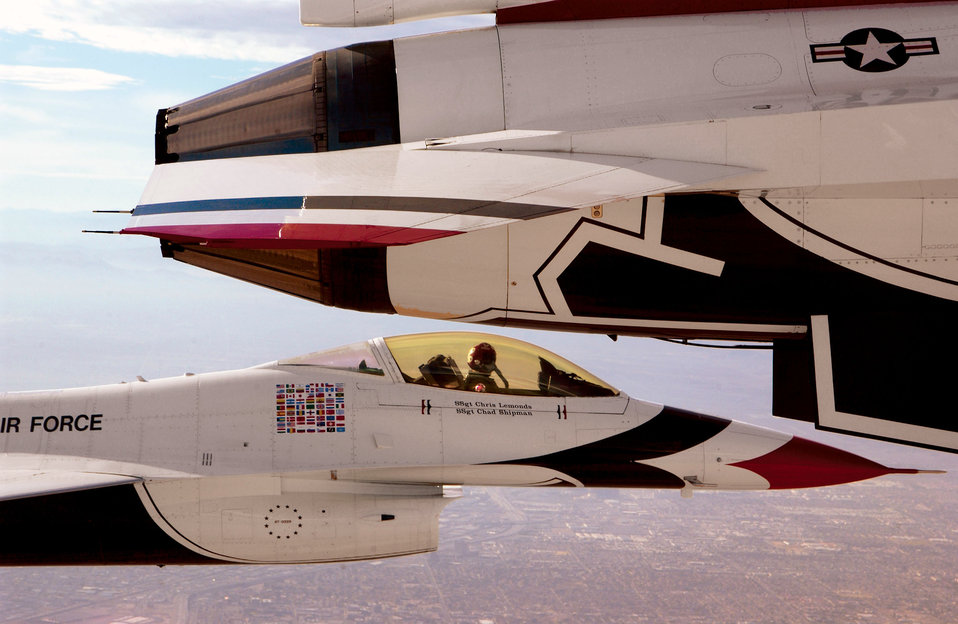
Wingman

NELLIS AIR FORCE BASE, Nev. -- Capt. Mark Smith, Thunderbird Two, concentrates on maintaining his left-wing position. Pilots in diamond formation must overcome the natural tendency to look at the ground and instead devote full attention to the lead aircraft.